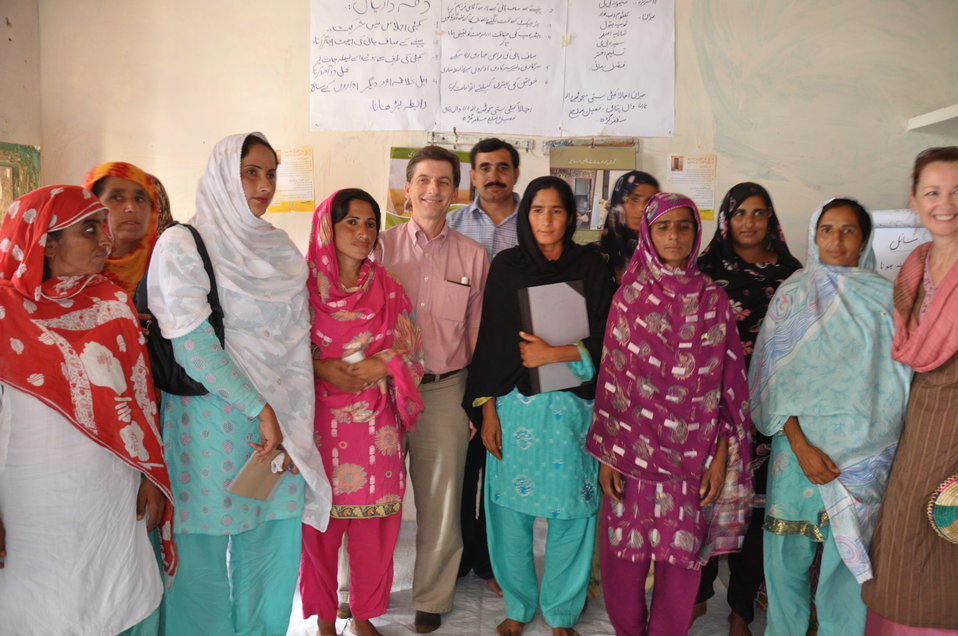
USAID Gender Equity Program